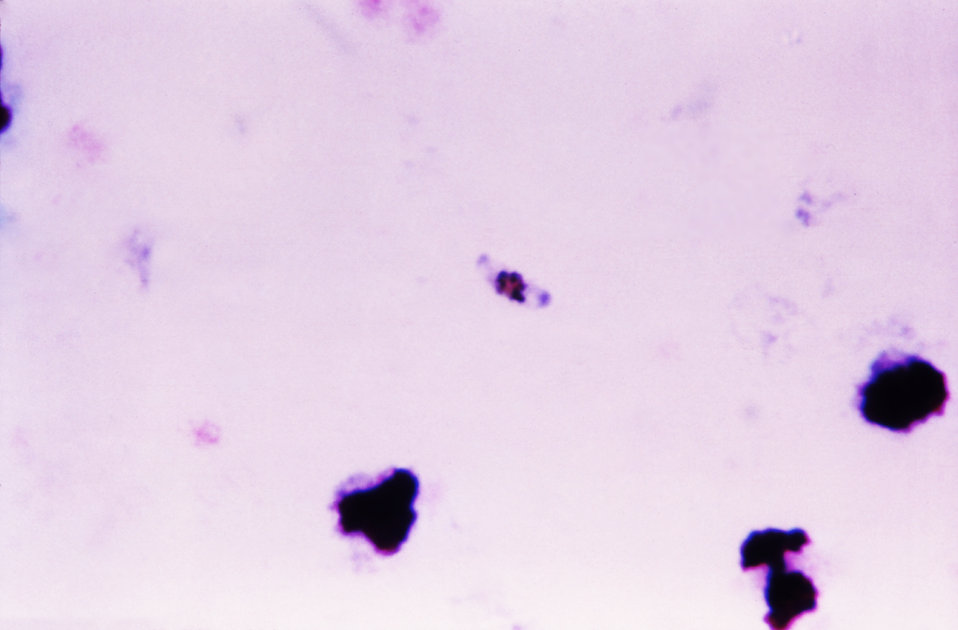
This thick film Giemsa stained micrograph reveals a Plasmodium falciparum gametocyte (Cntr).